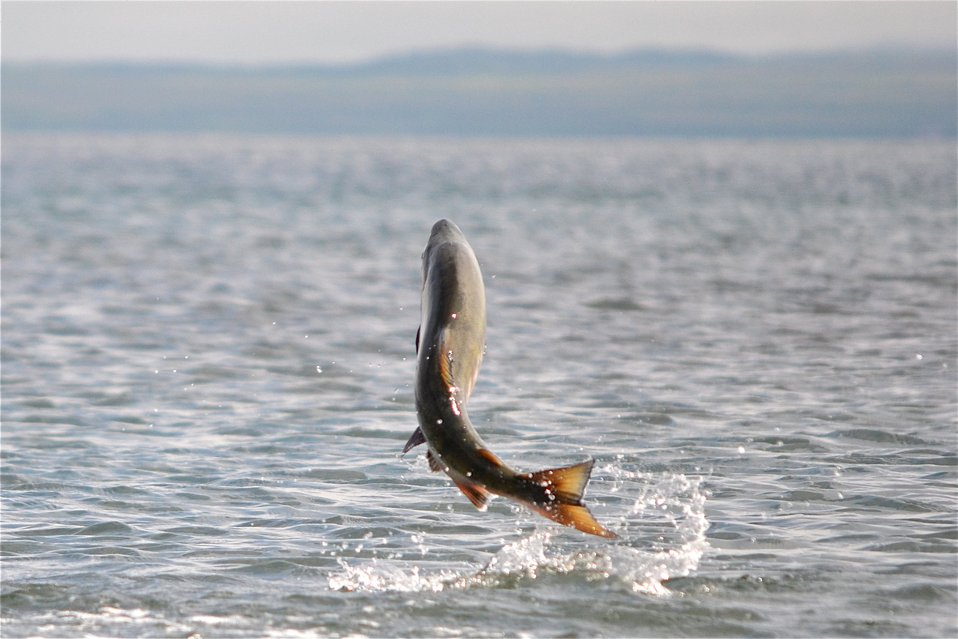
chum salmon leaping

Cold Bay, AK